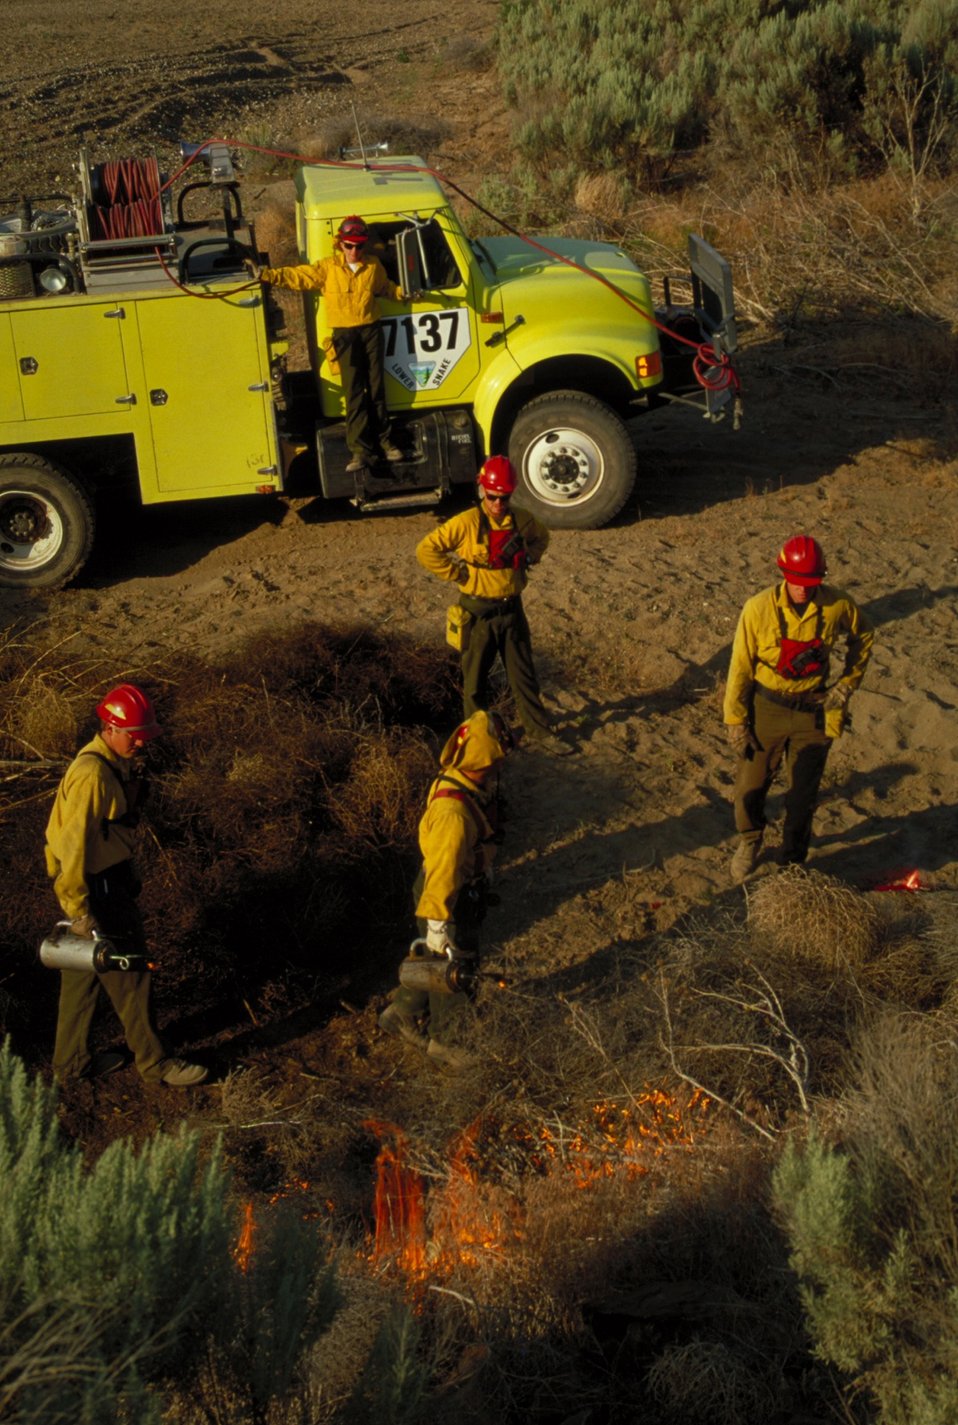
Prescribed burn Heavy engine Fire Season 2000 Lower Snake River District LSRD